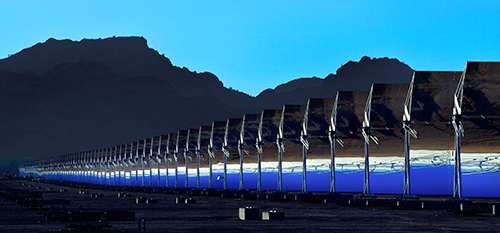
Installing mirrored parabolic trough collectors.

More than 3,200 mirrored parabolic troughs collectors being built at Abengoa's Solana Plant. Solana a 280 megawatt utility scale solar power plant (CSP) under construction in Gila Bend, AZ. When finished it will generate 280 MW's serving over 70,000 Arizona homes.